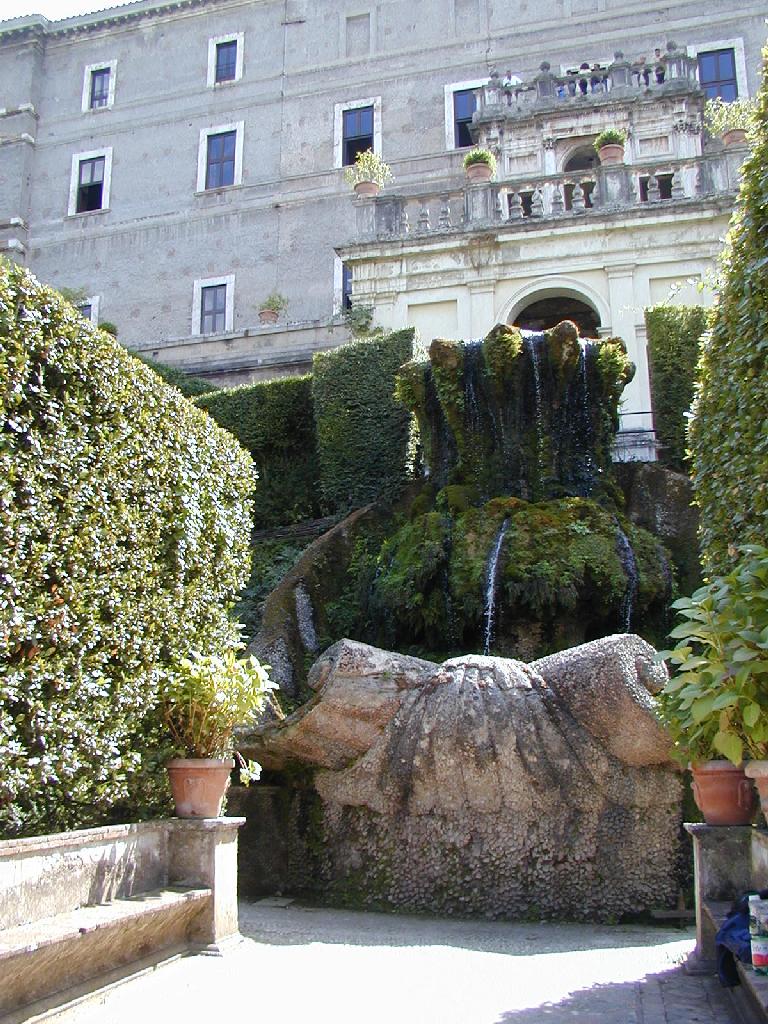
000910 tivoli v d este 41 facciata